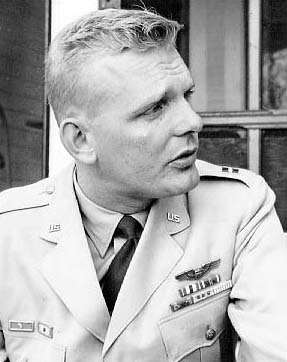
Captain Iven C. Kincheloe Jr.

1950's -- Captain Iven C. Kincheloe Jr. in November 1956 following his famous Bell X-2 flight. Kincheloe, the personification of the